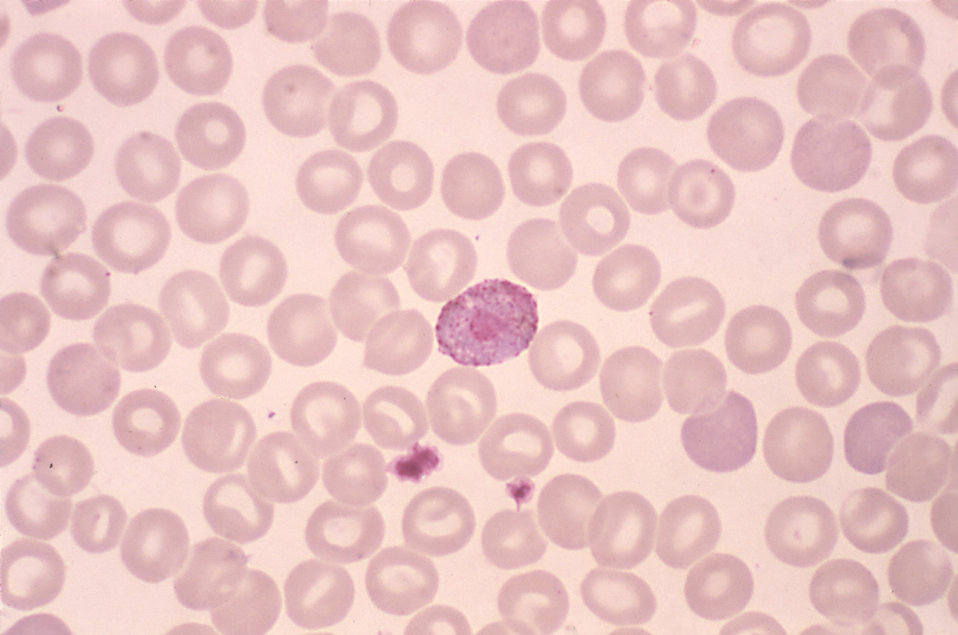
This blood smear photomicrograph depicts a Plasmodium vivax microgametocyte; Mag. 1000X.